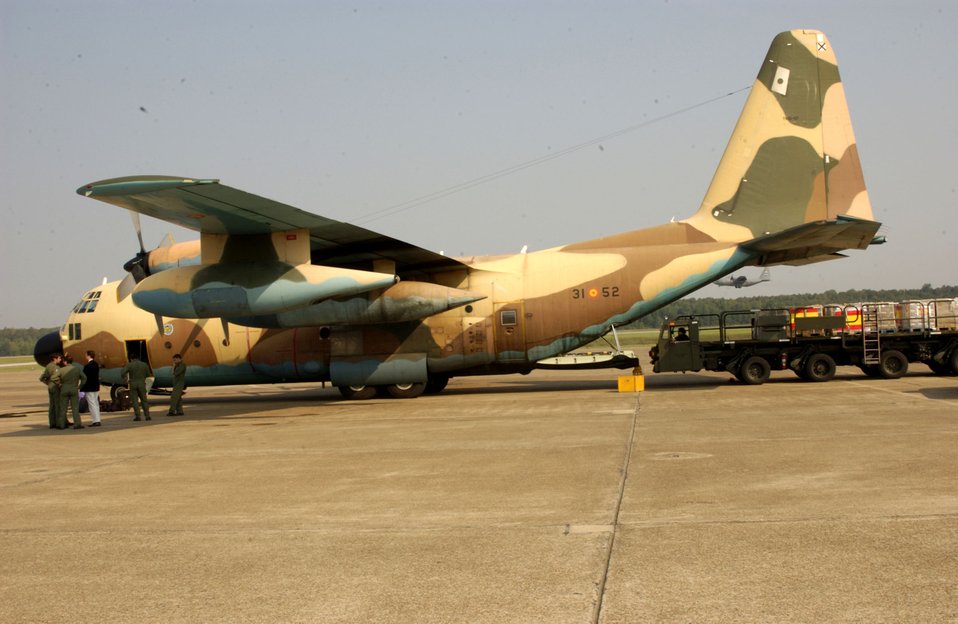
Help from afar

LITTLE ROCK AIR FORCE BASE, Ark. -- A C-130 from Spain brings supplies to help the areas affected by Hurricane Katrina on Sept. 8. The C-130 is a part of the international relief to help the United States in a time of crisis. The base is the hub for all international supplies to help hurricane victims.